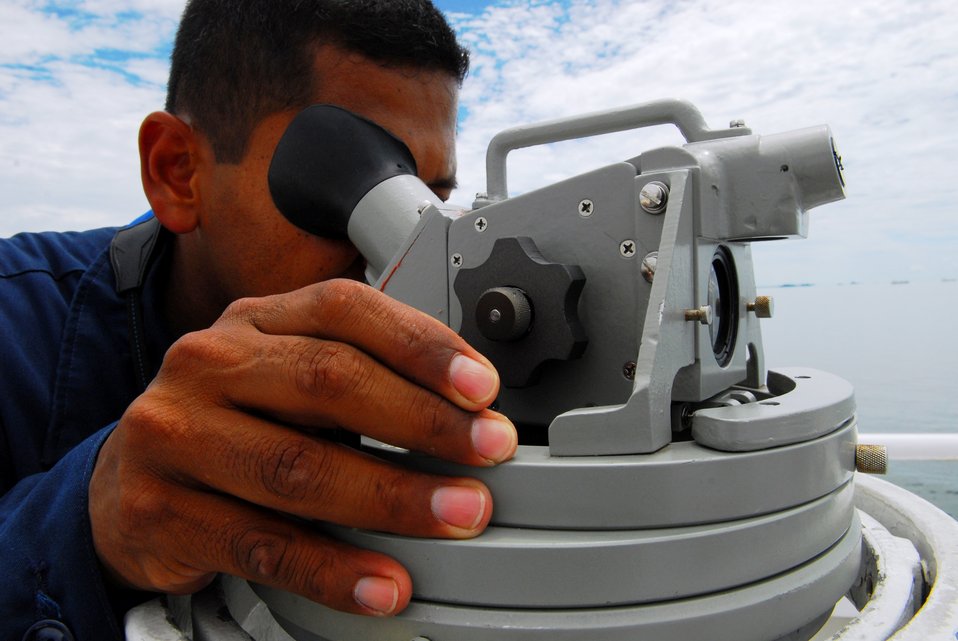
Ordinary Seaman Catalan Looks Through a Telescope Alidade

Ordinary Seaman Roberto Catalan, a civilian mariner embarked aboard the Military Sealift Command hospital ship USNS Mercy (T-AH 19), looks through a telescope alidade to get true bearings from surface contacts while Mercy transits the South China Sea on July 5, 2010, en route to Indonesia in support of Pacific Partnership 2010, the fifth in a series of annual U.S. Pacific Fleet humanitarian and civic assistance endeavors to strengthen regional partnerships.